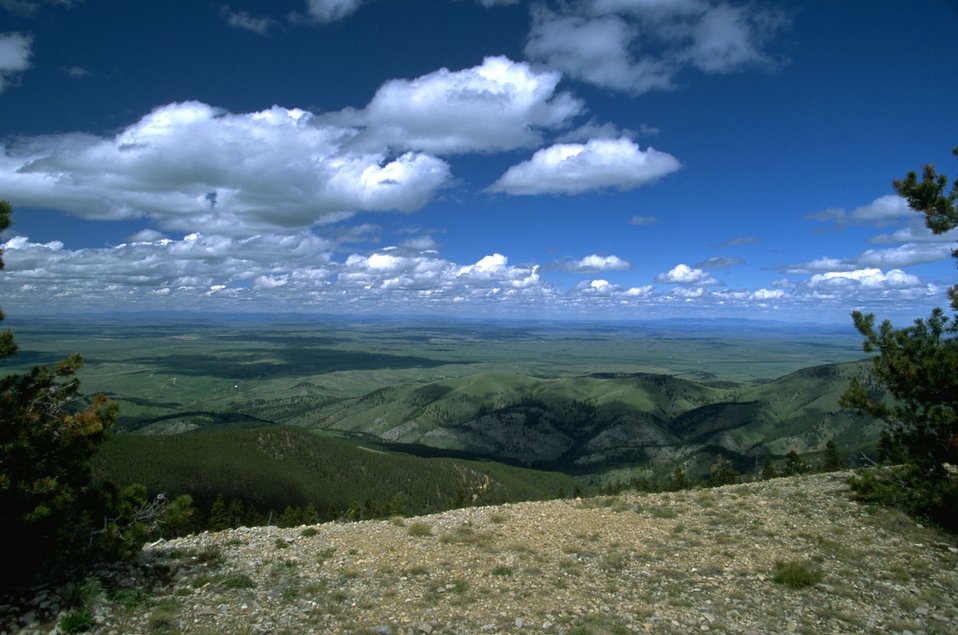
Scenic view of the Judith Mountain area